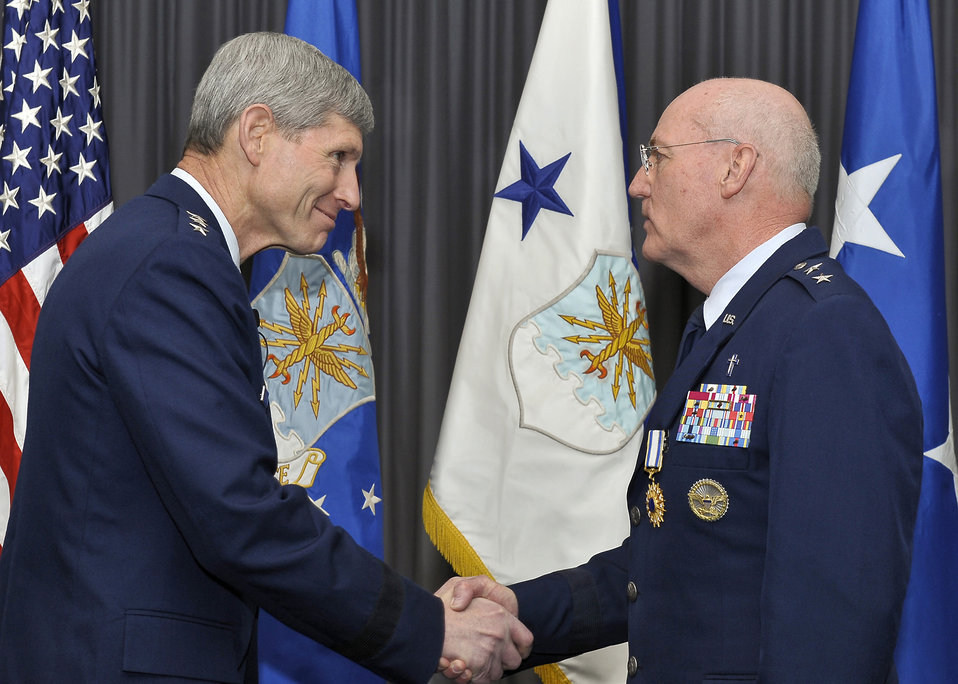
Top Air Force chaplain retires after 40-year career

Air Force Chief of Staff Gen. Norton Schwartz congratulates Maj. Gen. Cecil Richardson during his retirement ceremony April 30, 2012, at Joint Base Anacostia-Bolling, D.C. Richardson was the Air Force Chief of Chaplains at the time of his retirement.